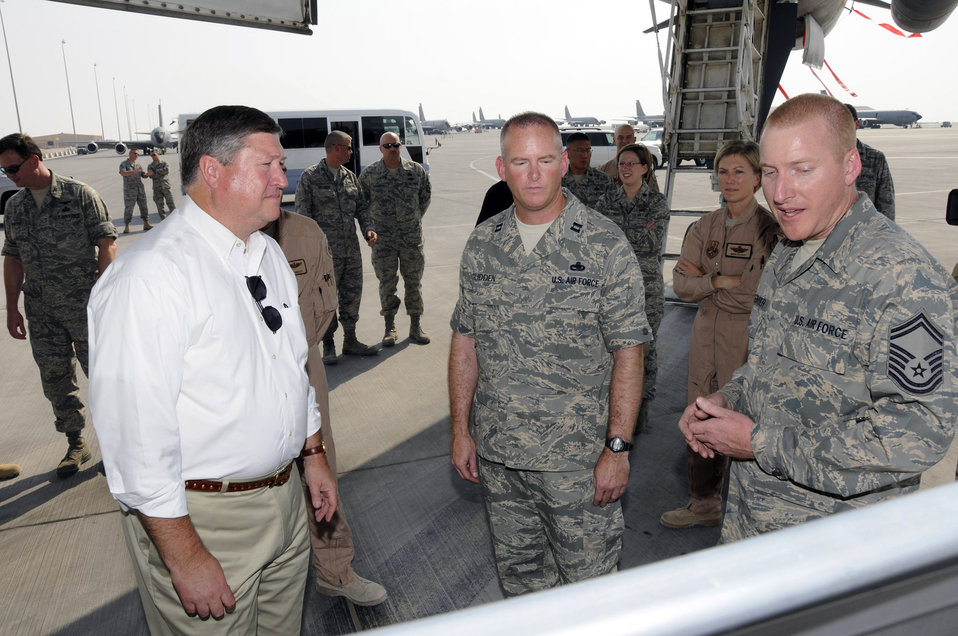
Secretary visits Airmen in Southwest Asia

Senior Master Sgt. David Egermier (right) explains B-1B Lancer maintenance procedures to Secretary of the Air Force Michael B. Donley (left) Oct. 11 at a Southwest Asia air base. Sergeant Egermier, along with Capt. Christopher Glidden briefed on the work required to keep aircraft mission ready. The secretary toured five different airframes at the base. Sergeant Egermier and Captain Glidden are assigned to the 379th Expeditionary Aircraft Maintenance Squadron.